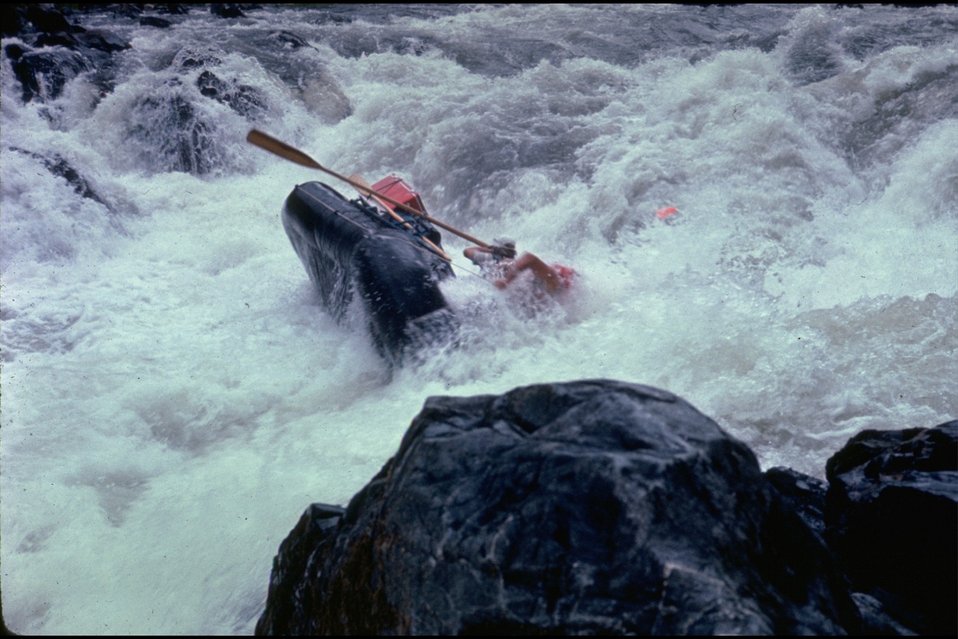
Rogue River - Rainie Falls. Raft flip in Rainie Falls, wild section.